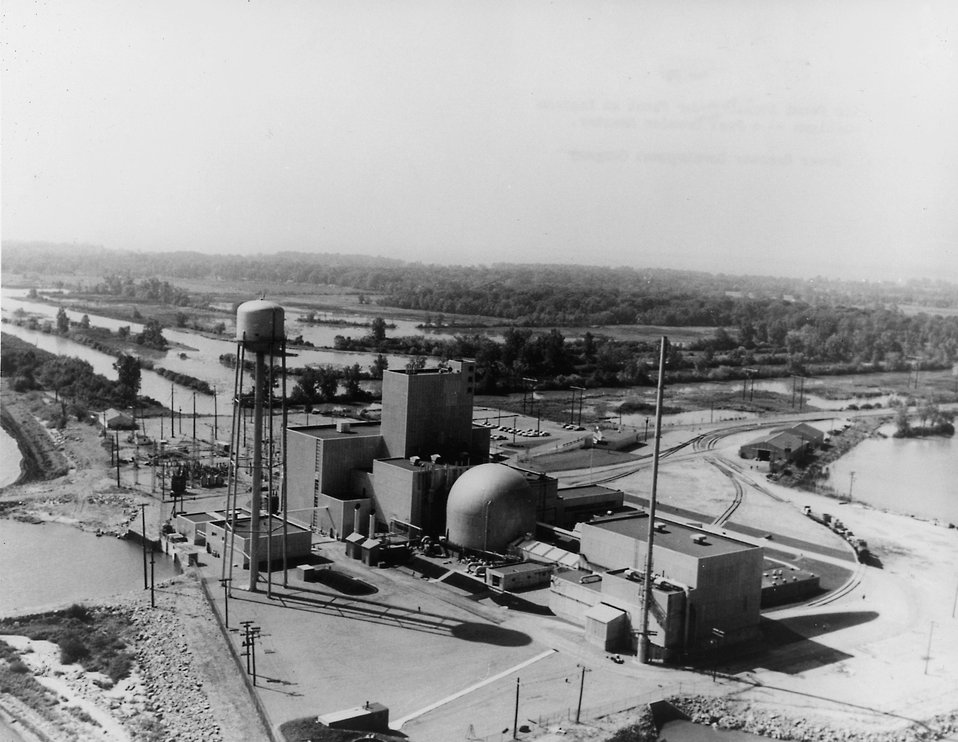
The Enrico Fermi Atomic Power Plant at Lagoona Beach, Michigan -- a Fast Breeder Reactor. Circa 1964.